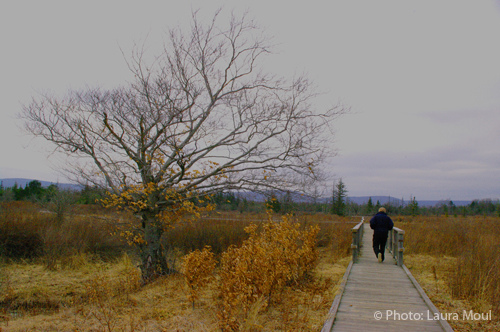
Boardwalker